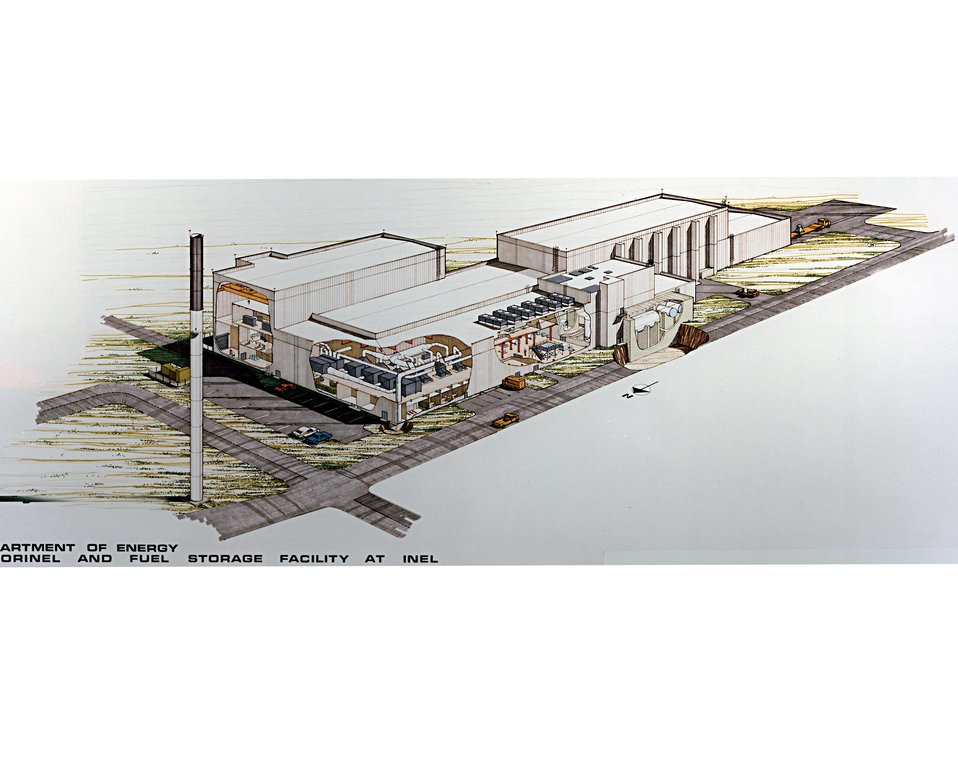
ARTIST'S CUTAWAY DRAWING OF THE NEW FLUORINEL FACILITY.

THE FLUORINEL FACILITY WILL INCLUDE AREAS FOR THE RECEIPT, HANDLING, STORAGE, AND DISSOLUTION OF SPENT REACTOR FUEL. THE DISSOLVED SOLUTION WILL BE TRANSFERRED TO EXISTING FACILITIES AT THE IDAHO FUEL PROCESSING FACILITY FOR RE- COVERY OF CONTAINED URANIUM. THE FACILITY WILL PROCESS A WIDE VARIETY OF SPENT FUELS, INCLUDING NAVAL, TEST, AND RESEARCH REACTOR FUELS, TO INCREASE THE AMOUNT OF URANIUM RESOURCE AVAILABLE TO THE UNITED STATES.